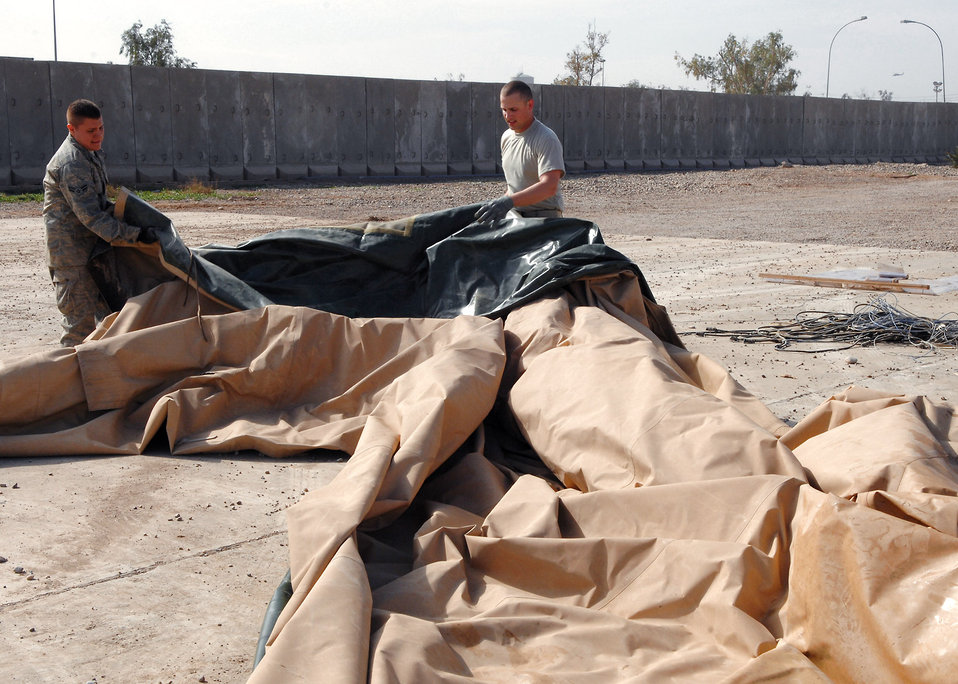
Temporary hospital finds permanent place in history

Senior Airmen Lewis Paine and Ivan Alandzak prepare a portion of a tent Feb. 29 for shipment to the National Museum of Health and Medicine in Washington where it is slated for exhibition. The tent was part of the origianal Air Force Theater Hospital at Balad Air Base, Iraq. The medical community considers the tent to be the place where the most American blood was spilled since the Vietnam War. Airman Paine is a 332nd Expeditionary Civil Engineer Squadron power production journeyman deployed from Ellsworth, S.D. and Airman Alandzak is a 332nd ECES liquid fuel journeyman deployed from Malmstrom Air Force Base, Mont.